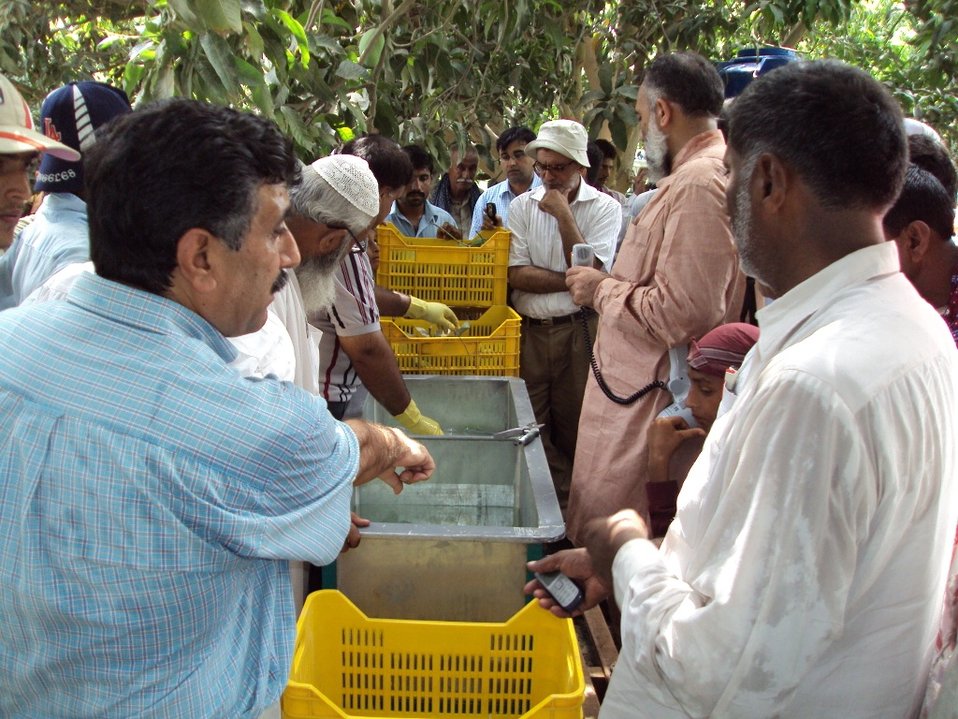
USAID supporting Pakistan's mango sector

USAID trained 3,000 farmers handle and process mangoes to preserve their quality and shelf life. USAID is helping the farmers attain GLOBAL Good Agricultural Practices (GAP) certification and create market linkages with international buyers. USAID assistance will directly benefit two million Pakistanis, raise revenues for numerous businesses, generate employment, and boost the economy throughout Pakistan, especially in Southern Punjab and Northern Sindh.